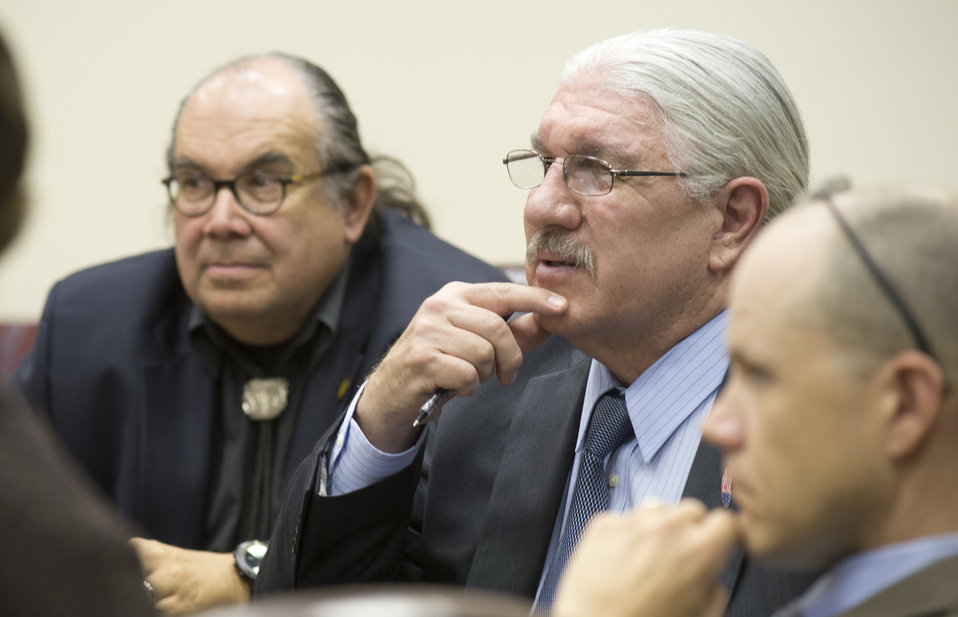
(L to R) South Central Foundation, Alaska Native Medical Center, AK Dr. Ted Mala, U.S. Department of Agriculture (USDA) Deputy Under Secretary for Natural Resources and Environment (NRE) Butch Blazer, and USDA Acting Under Secretary Rural Development (RD) Doug O’Brien listen to Agriculture Deputy Secretary Krysta Harden speak at a roundtable discussion on Agriculture, Community and Economic Development Opportunities in Indian Country with Agriculture with tribal leaders at USDA in Washington, D.C. on Tuesday, Nov. 12, 2013.